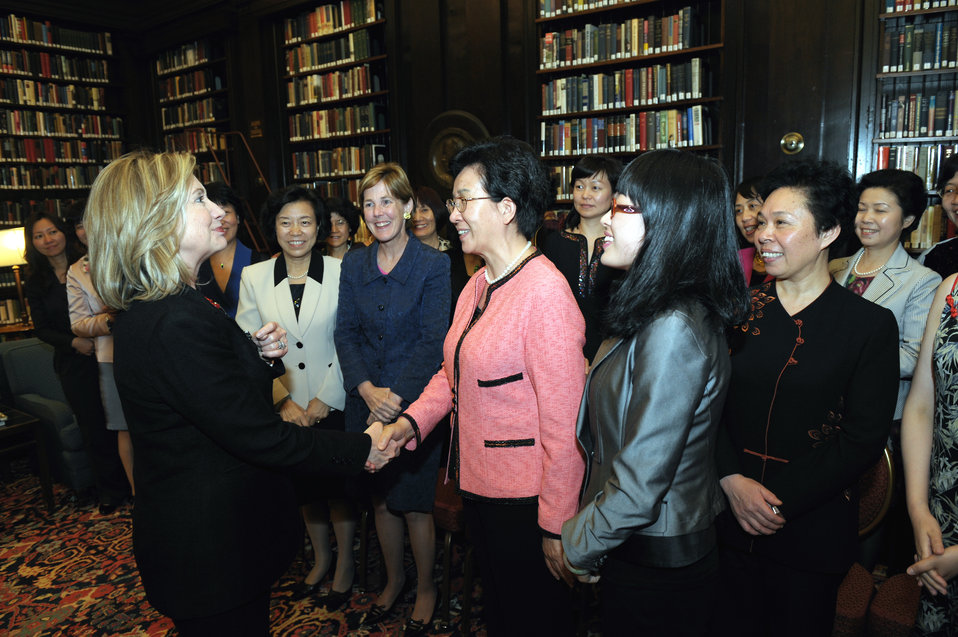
Secretary Clinton and Ambassador Verveer Meet With Participants in the Yale Chinese Women's Leadership Development Program

U.S. Secretary of State Hillary Rodham Clinton and Ambassador-at-Large for Global Women’s Issues Melanne Verveer meet with participants in the Yale Chinese Women’s Leadership Development Program, the first of several public-private partnerships formed under the auspices of the U.S.-China Women’s Leadership Exchange and Dialogue (Women-LEAD), at the Metropolitan Club in Washington, D.C., on May 10, 2011.